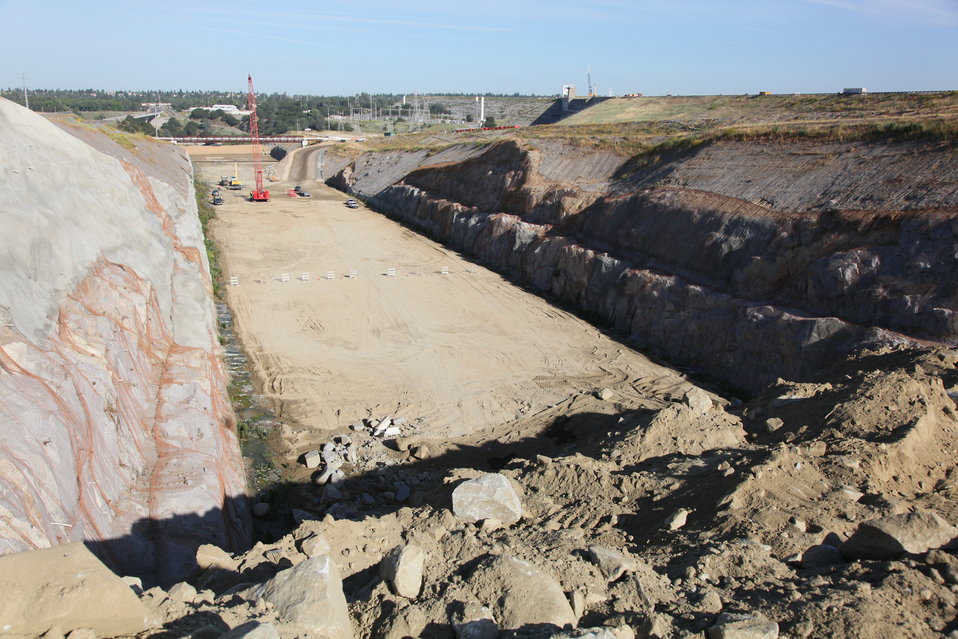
Excavating Folsom Dam’s auxiliary spillway

Excavation of the auxiliary spillway at Folsom Dam in Folsom, Calif., continues June 16, 2011. The spillway will let Folsom Dam release water sooner and more safely. The project is part of the Folsom Dam Joint Federal Project, a joint effort of the U.S. Army Corps of Engineers Sacramento District, the U.S. Bureau of Reclamation, the Central Valley Flood Protection Board and the Sacramento Area Flood Control Agency to improve the safety of the dam and reduce flood risk for the greater Sacramento area.